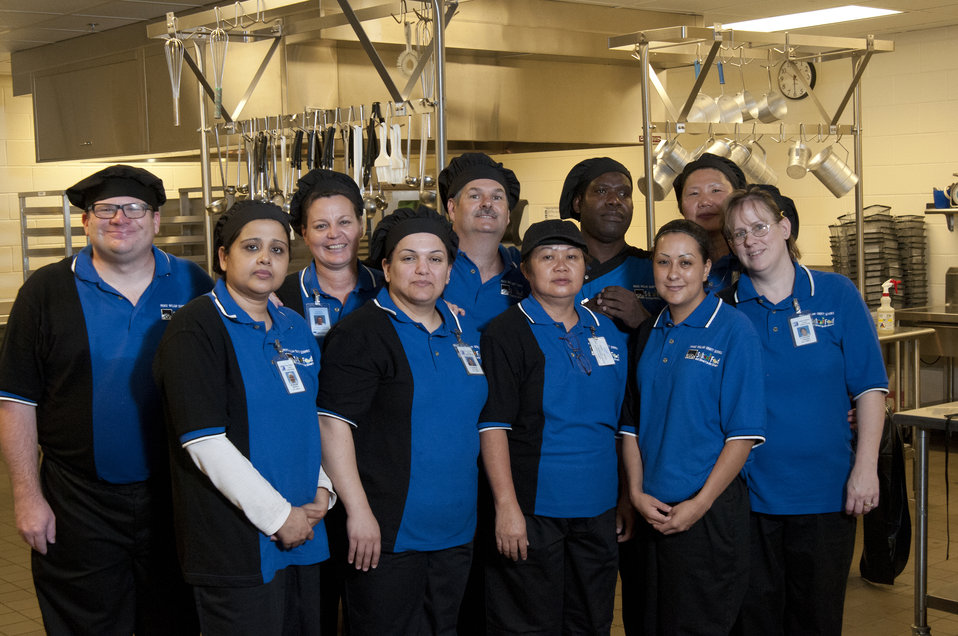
School lunch staff and students enjoy the new school lunch menu created to meet the new standards at the Yorkshire Elementary School in Manassas, VA on Friday, Sept. 7, 2012.